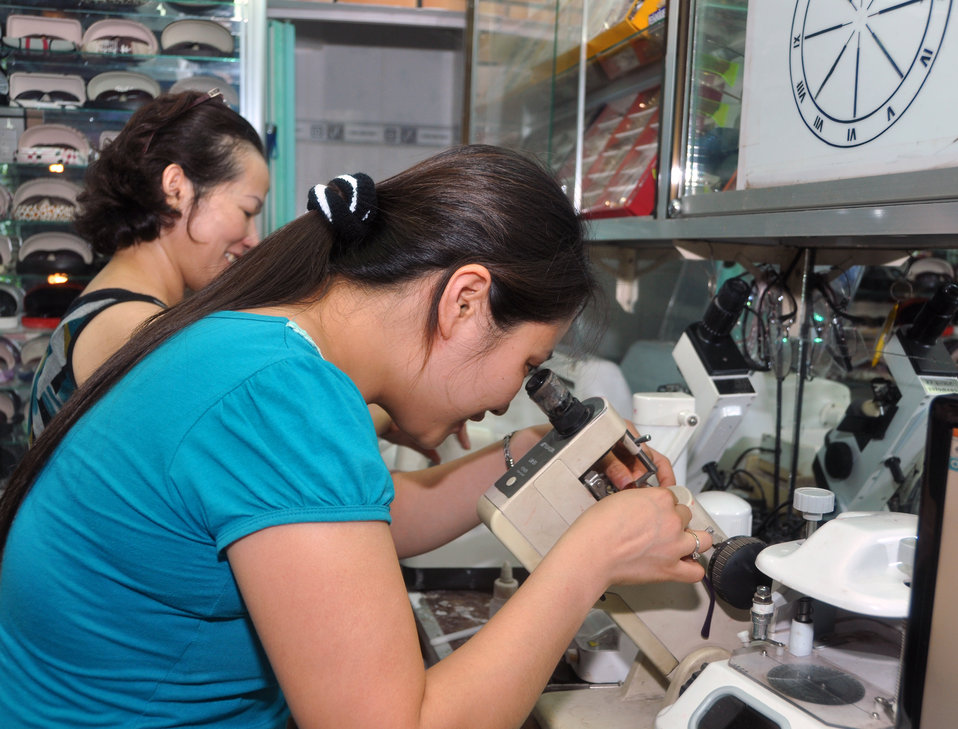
An eyeglasses specialist from the National Eye Hospital checks the quality of new glasses for students in Kon Tum.